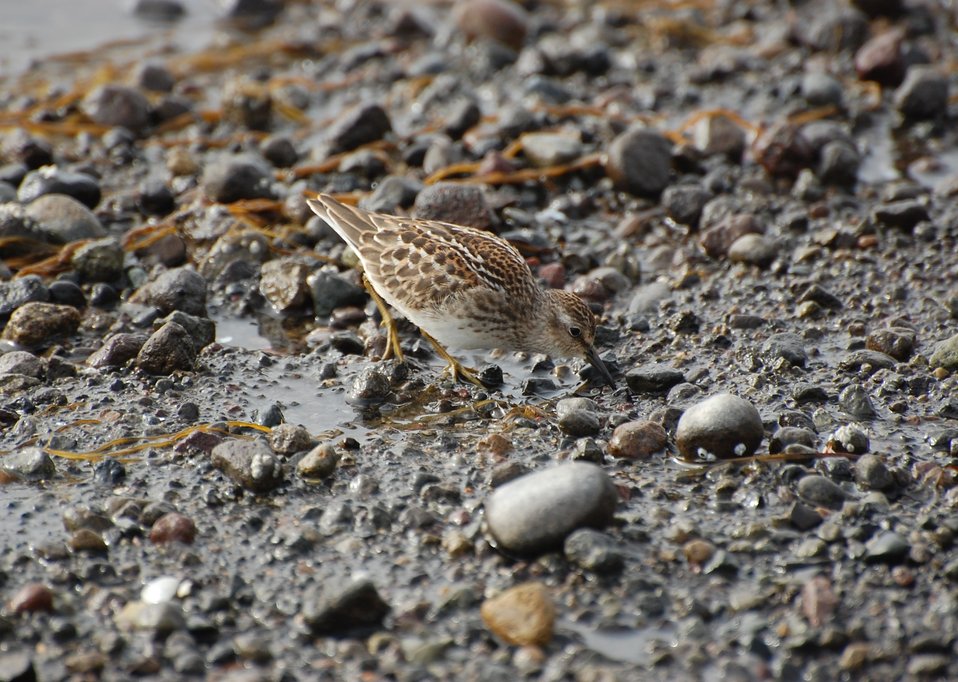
Least sandpiper

Kinzarof Lagoon, Izembek National Wildlife Refuge
Photo by Kristine Sowl,
USFWS, Public Domain